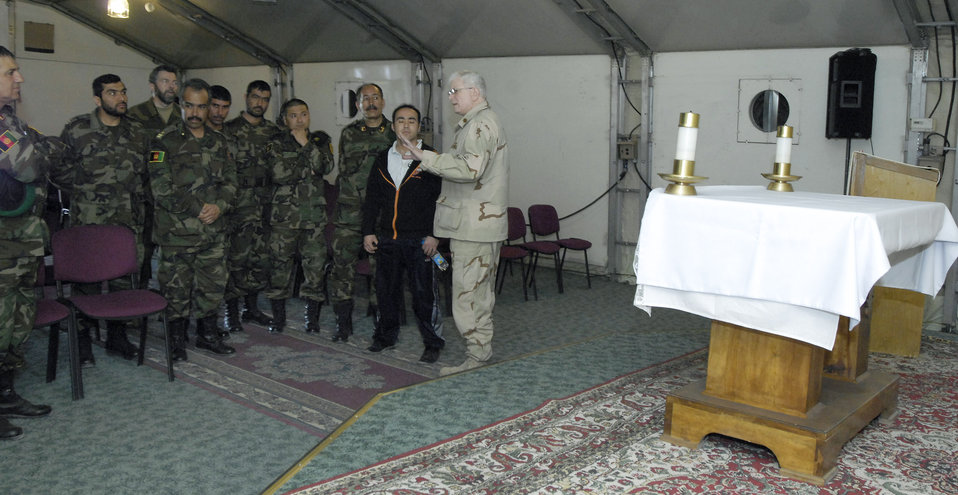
Afghan commanders visit chapel

Commanders from the Afghan national army are briefed by Chaplain (Maj.) William Bartoul (right) March 24 at Manas Air Base, Kyrgyzstan. The Afghan commanders, who are transiting Manas AB on their way back from training in Germany, asked for a tour of the facility. Chaplain Bartoul briefed the commanders on the variety of worship available at the base and how base chaplains help facilitate servicemembers of all religions to practice their faith. Chaplain Bartoul is assigned to the 376th Air Expeditionary Wing.